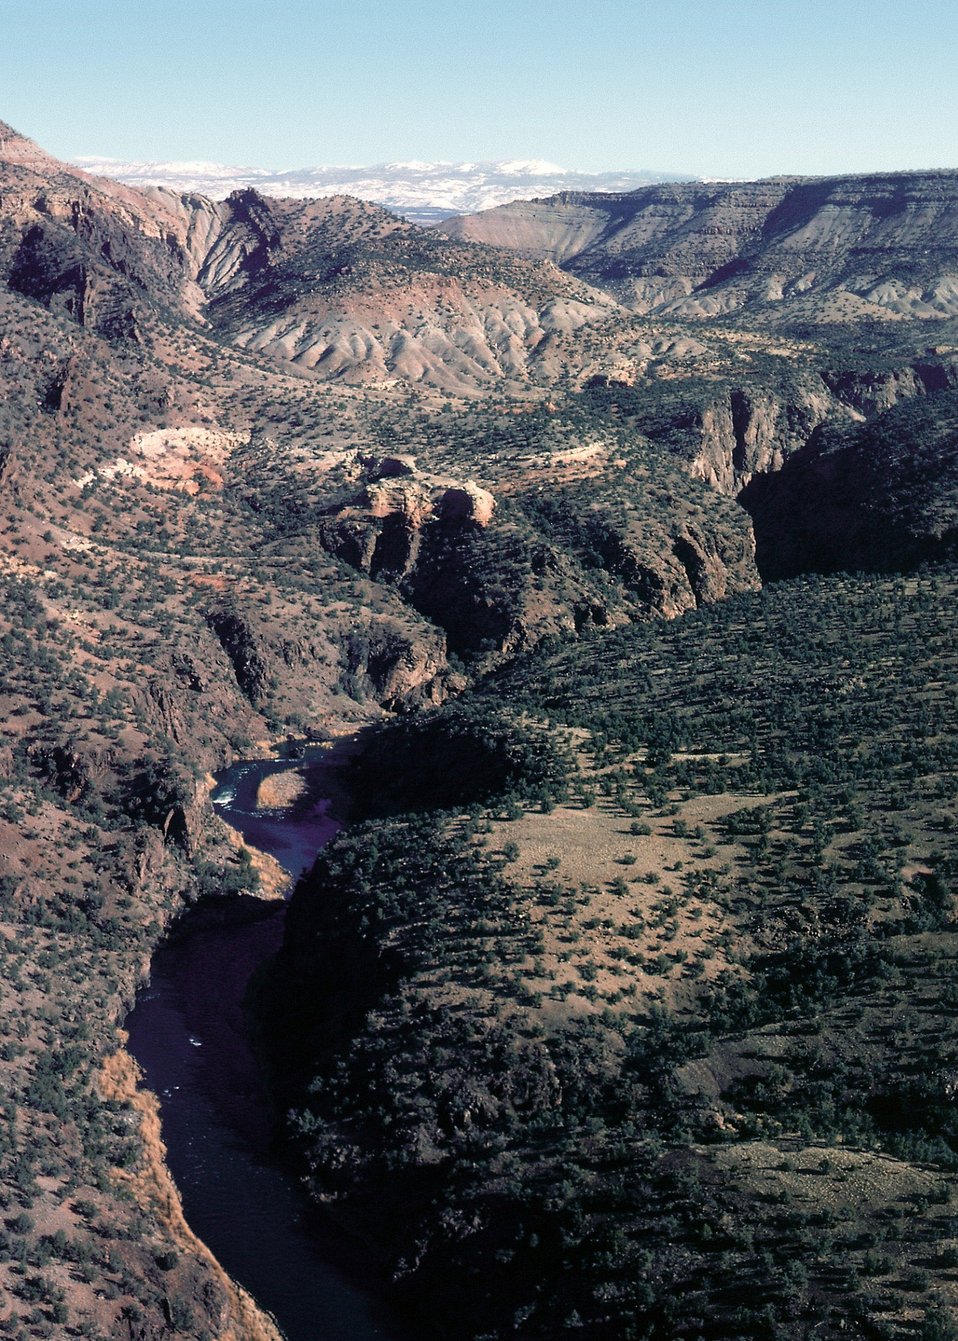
Over View